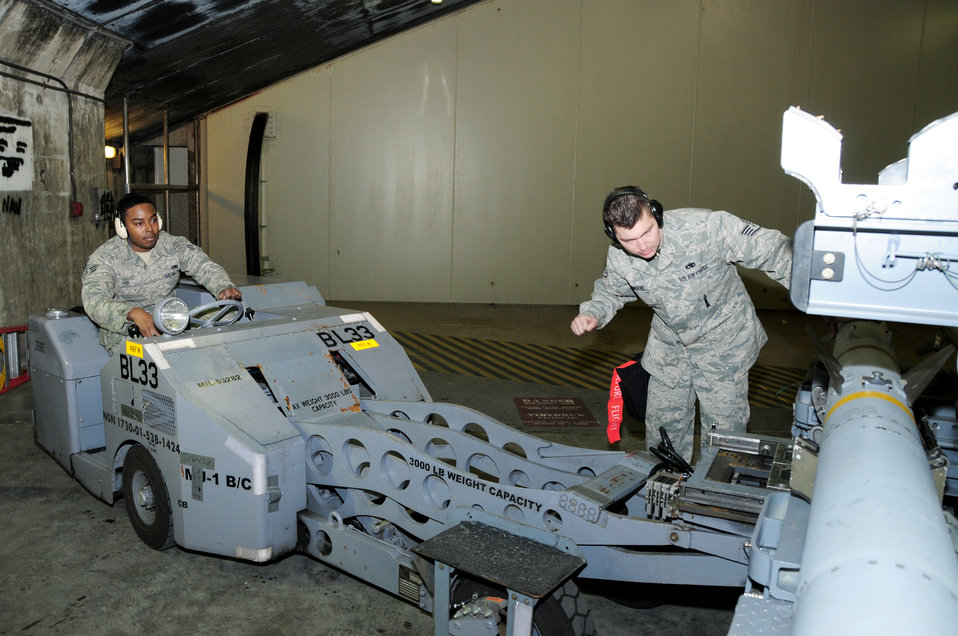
Icelandic Air Policing Mission

Staff Sgt. Ronald Townsend guides Senior Airman Jonathan Ard as he drives an MJ-1, a vehicle specially made to load munitions, into position to pick up an AIM-120 Advanced Medium-Range Air-to-Air Missile Sept. 23, 2010, at Keflavik, Iceland. Sergeant Townsend and Airman Ard are with the 493rd Expeditionary Fighter Squadron Weapons Load Crew.